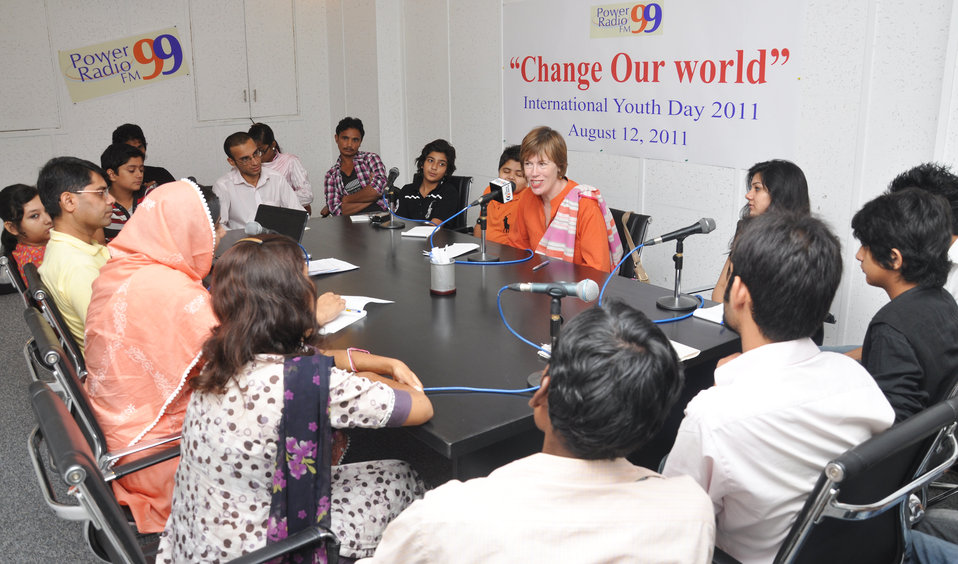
International Youth Day 2011

Islamabad, August 12, 2011 – Dr. Marilyn Wyatt, wife of U.S. Ambassador Cameron Munter, joined young people for a discussion that marked the international youth day at Power Radio FM 99.